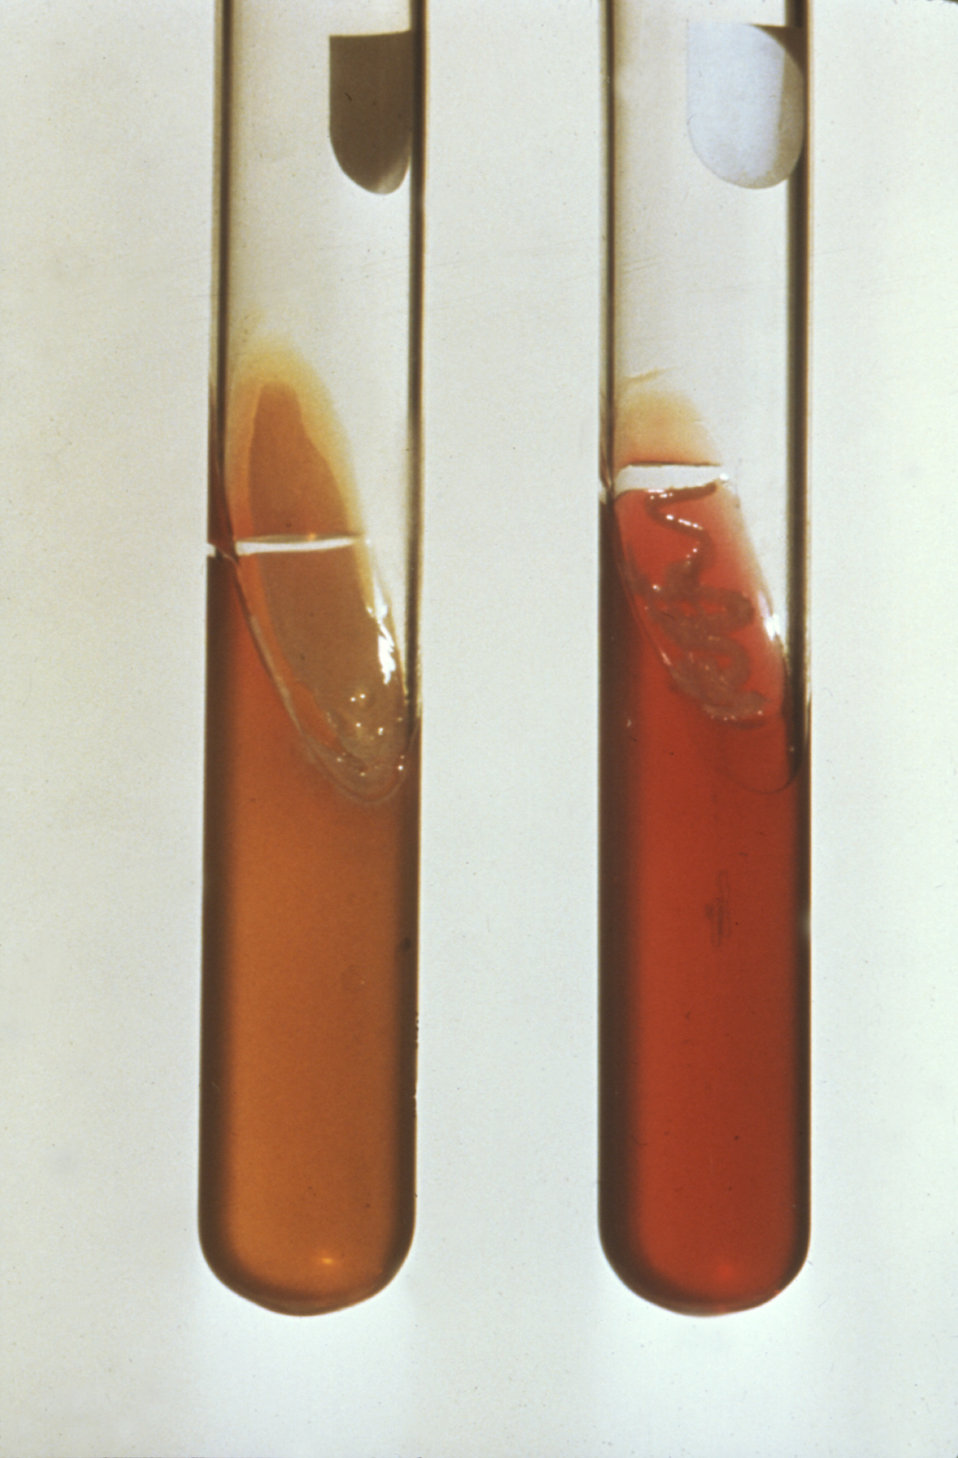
This image depicts two Triple Sugar Iron (TSI) slant cultures with a fermentative reaction (Lt.) vs. non-fermentative (Rt.).